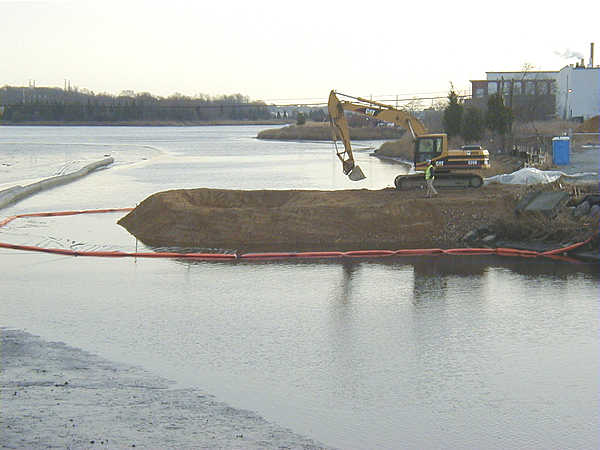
2003, A temporary dam to help the cleanup action

A view looking south into New Bedford Harbor.

This is one of two dams constructed to redirect the Acushnet River from the work zone in between the Main Street and Wood/ Slocum Street bridges.

This cleanup project removed about 12,000 cubic yards of highly PCB contaminated sediment from the river bed and surrounding mud flats and shoreline areas.